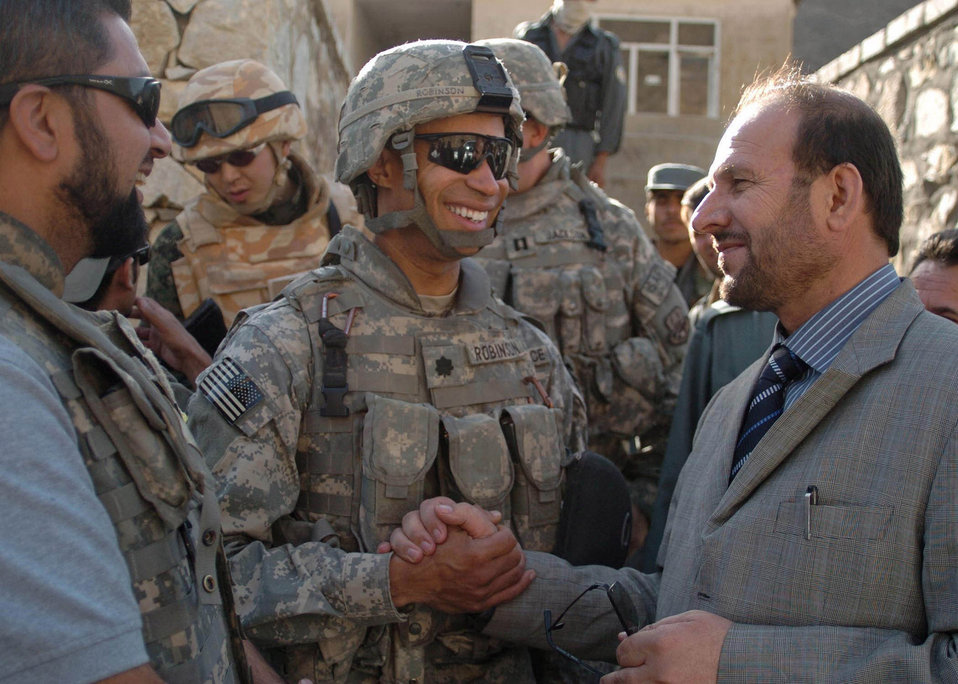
Progress continues in Parwan, Afghanistan

Lt. Col. Bobby Robinson (center), the Bagram Provincial Reconstruction Team commander, and Parwan Province Deputy Gov. Abdul Basir Salangi (right), shake hands after surveying a possible construction sight for Parwan?s newest district center Sept. 5 in Salang District, Afghanistan.